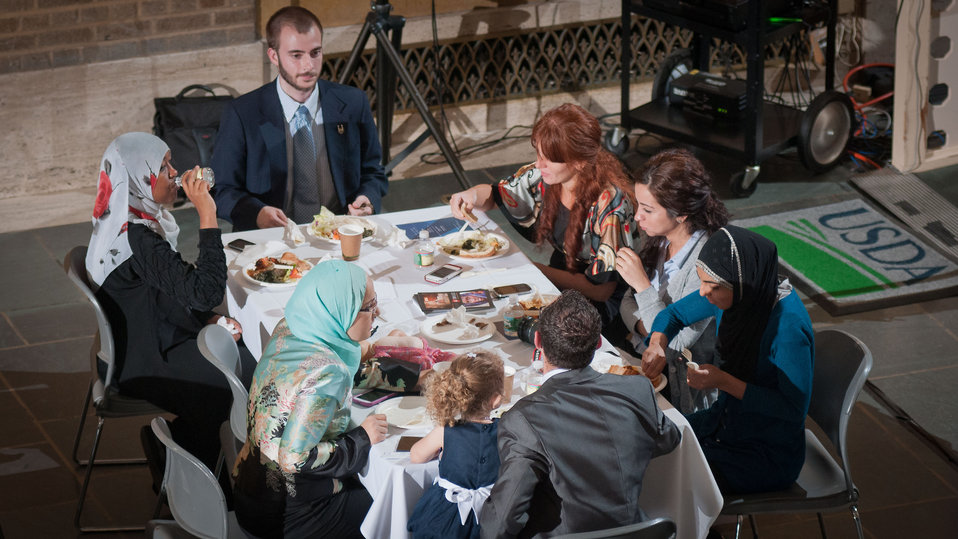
The Iftar celebration, co-sponsored by the U.S. Department of Agriculture, U.S. Agency for International Development (USAID) and Islamic Relief USA, on Tuesday, August 7, 2012, in the USDA Whitten Building, in Washington, D.C. Ramadan is the month of fasting, intensive prayer, sacrifice and worship for Muslims around the world. Throughout this month, Muslims fast during the day, abstaining from consuming food from dawn to dusk and using this time to purify spiritually. Fasting reminds Muslims of the poverty and hunger suffered by many in the United States and worldwide. It is a connection with those who are hungry not through devotion, but through the many global factors that lead to hunger and famine. Iftar is the meal at which Muslims break their fast at sunset, usually by eating dates, according to the Prophetic tradition.